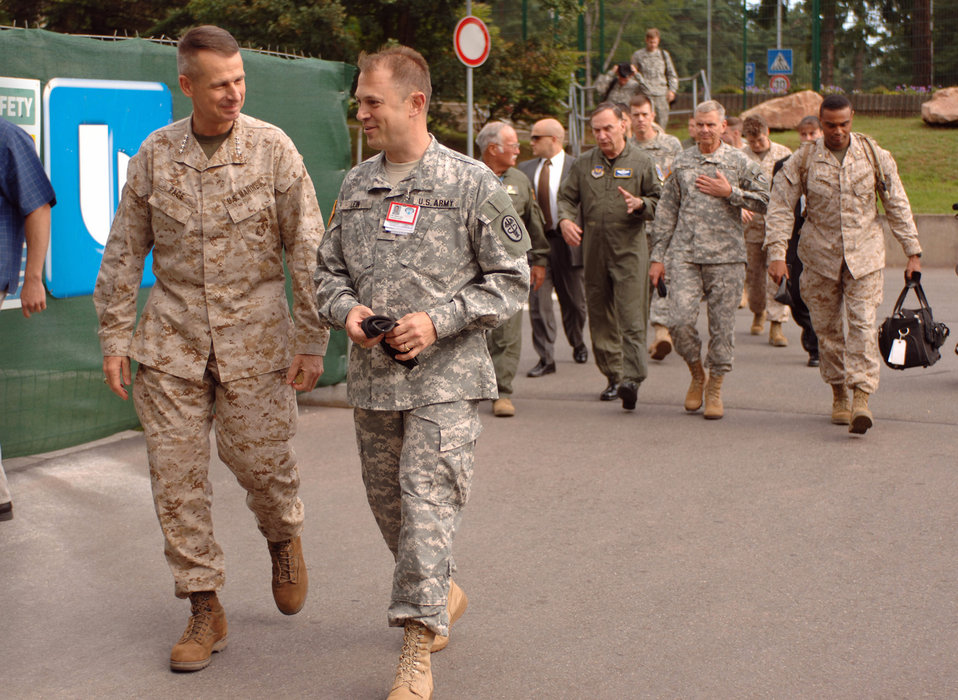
Purple Heart presentation

Chairman of the Joint Chiefs of Staff Gen. Peter Pace speaks with Landstuhl Regional Medical Center commander, Col. Brian C. Lein, during a short-notice visit to the largest American hospital outside the United States, July 21. The general presented Purple Heart and spoke with several patients in the intensive care unit. Among those taking part in the visit were Gen. William T. Hobbins, U.S. Air Forces in Europe commander; Lt. Gen. Gary D. Speer, deputy commanding general and chief of staff, U.S. Army Europe and Seventh Army; and H.C.